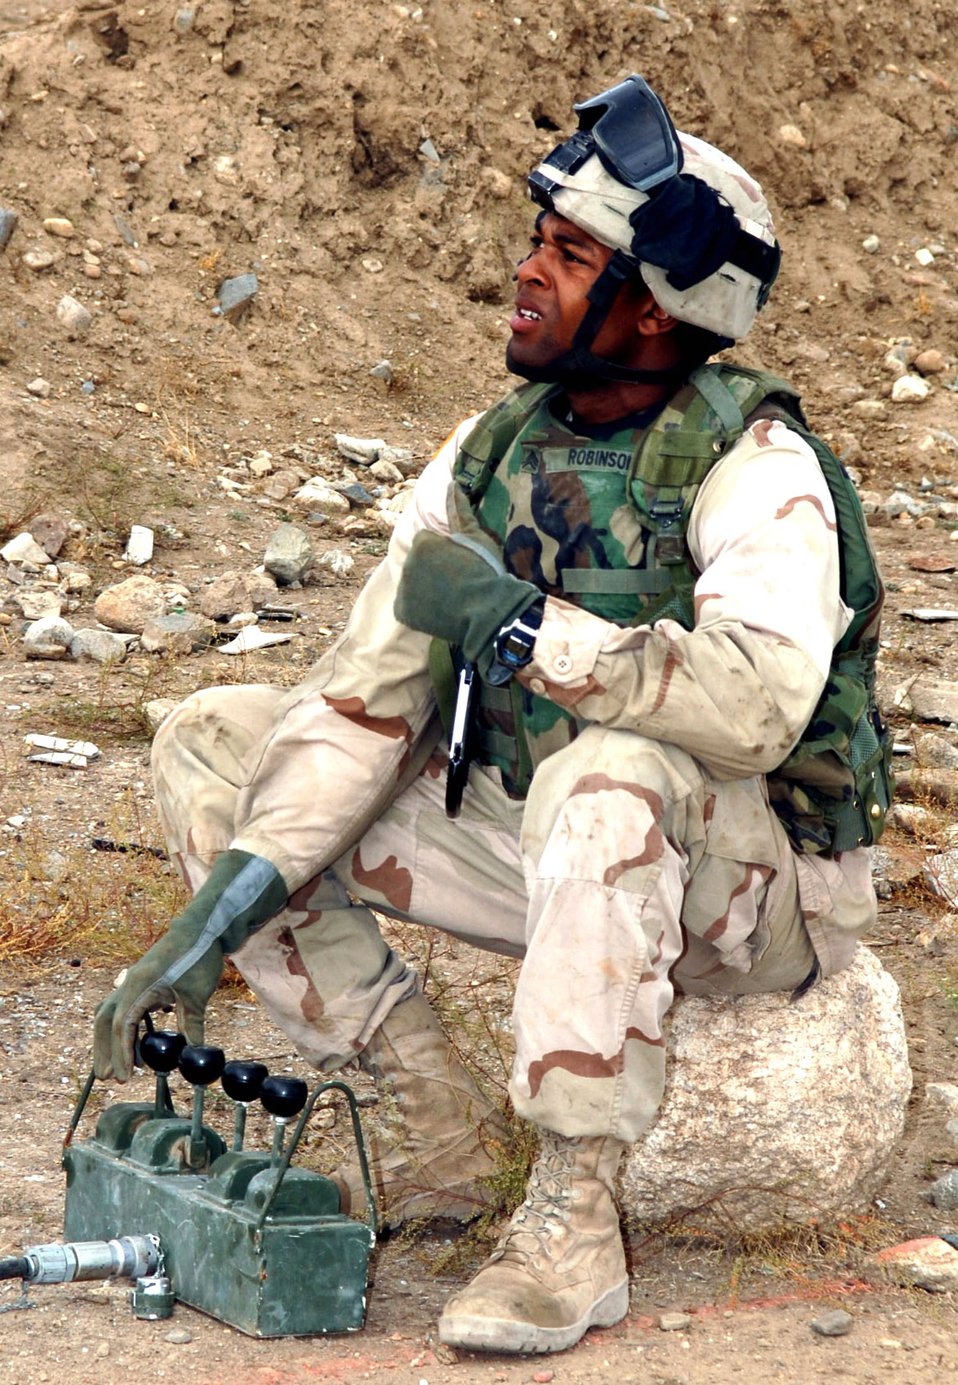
Directing the way

BAGRAM FIELD, Afghanistan -- Army Sgt. Shabber Robinson directs a load of one of three 5,000-pound rockets onto a wrecker. Germany-based Soldiers joined members of the 455th Expeditionary Civil Engineer Squadron Explosive Ordnance Disposal Flight here in transporting the rockets from an old Soviet ammunition supply dump near here to a secure site for destruction. The Soldier is from the 5th Maintenance Company at Kaiserslautern, Germany.